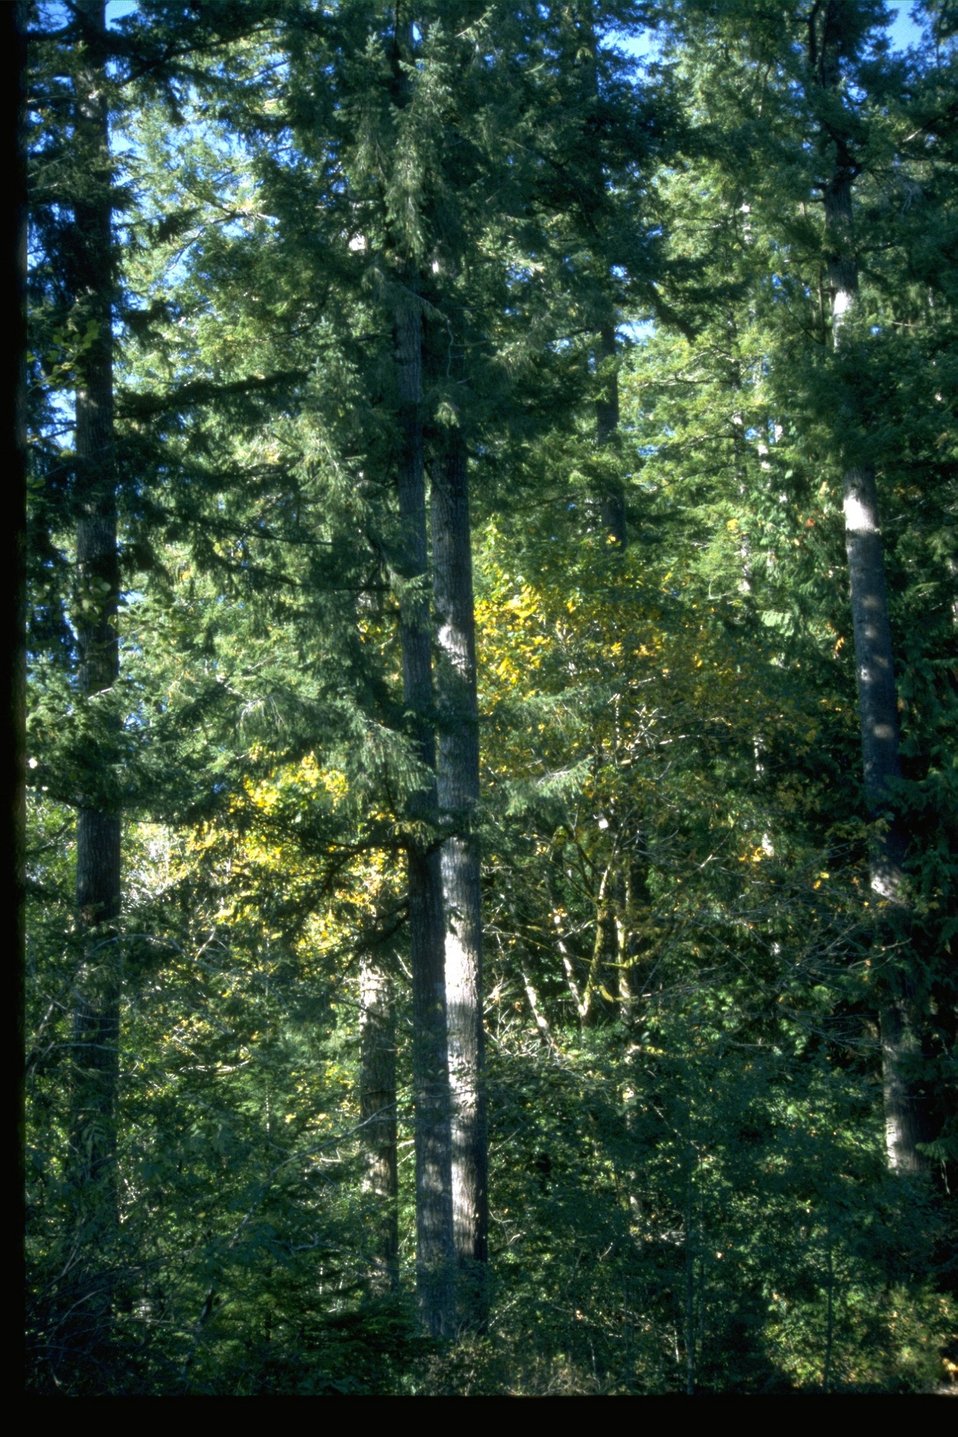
Second growth in the fall at Blue Ridge.